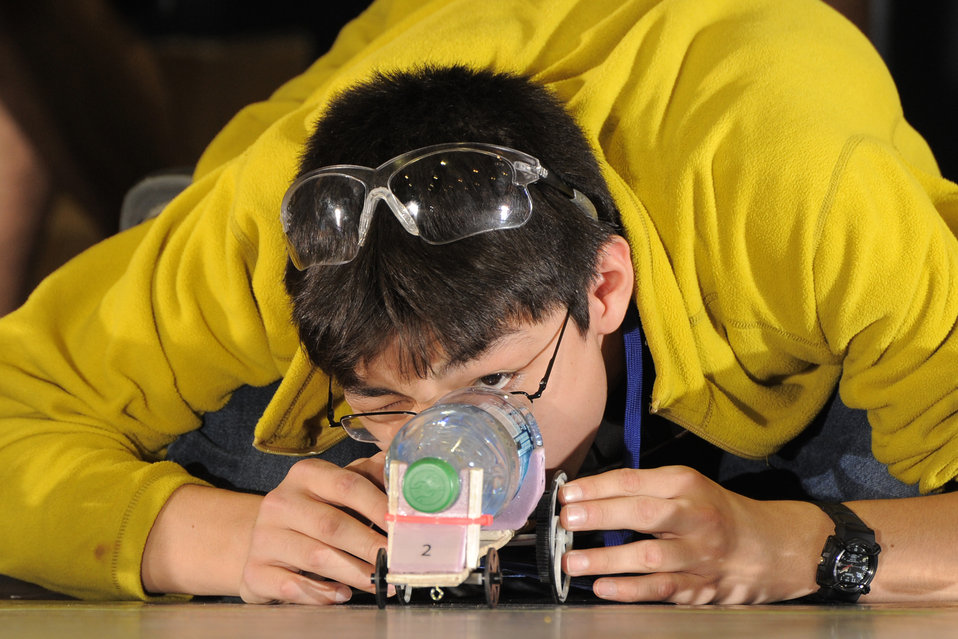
Team Minnetonka Middle School West in Excelsior, Minnesota competes at the Lithium-Ion Battery Powered Model Car Challenge during the 2012 National Science Bowl in Washington, DC on April 29, 2012.